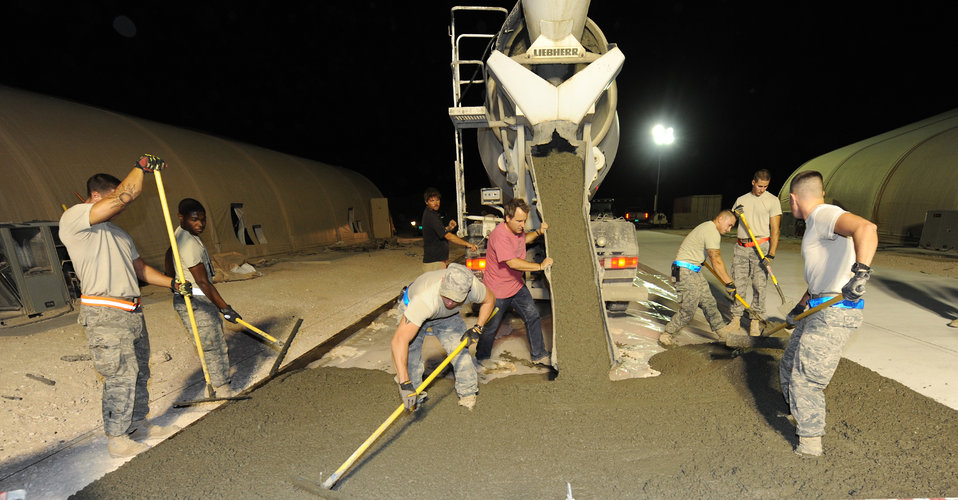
Making improvements

Airmen assigned to the 379th Expeditionary Civil Engineer Squadron spread concrete June 15, 2011, as part of a project in Southwest Asia.